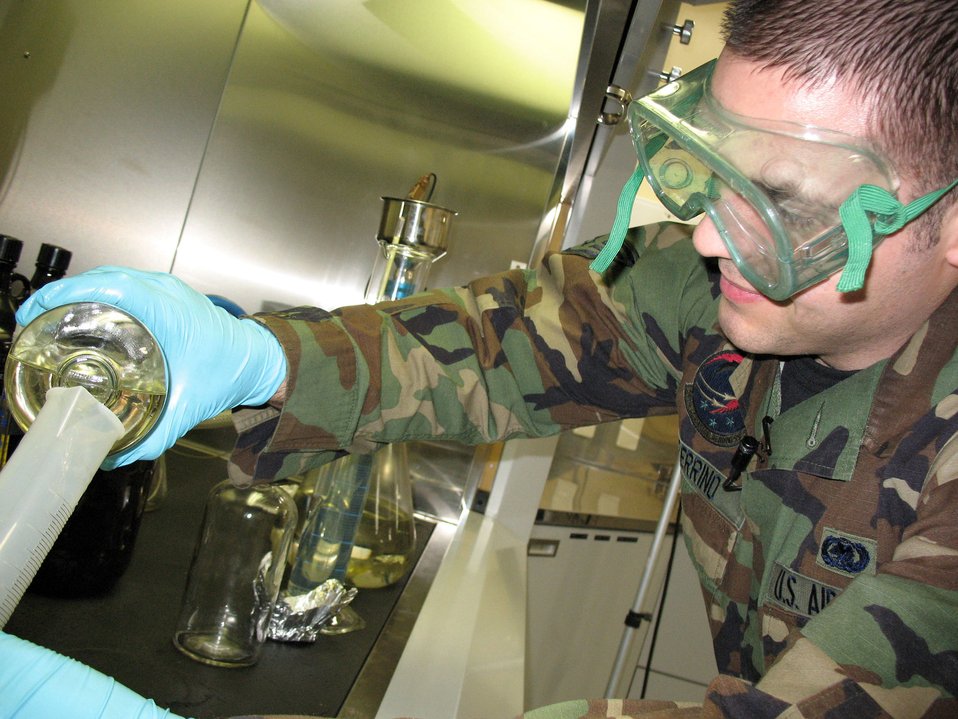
Fuel tests keep Misawa moving

Staff Sgt. Mike Perrino mixes chemicals to test for additives in a sample of MOGAS at Misawa Air Base, Japan. The additives are in the fuel when it arrives on base, but if it is absent there can be problems when using the fuel in machinery. Sergeant Perrino is the NCO in charge of the 35th Fighter Wing's Fuel Laboratory.